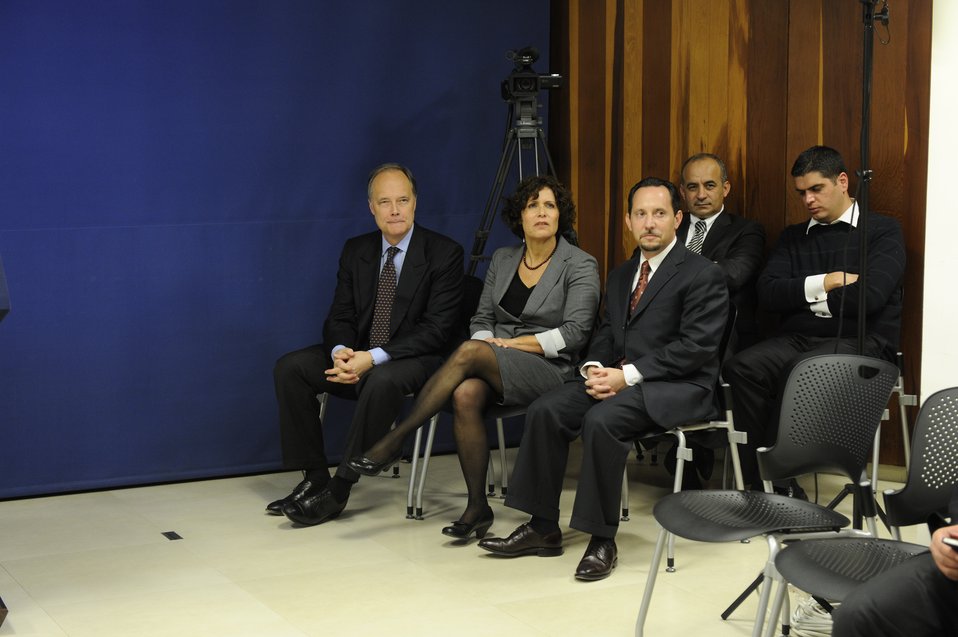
Ambassador Cunningham, Consul General Rubinstein, and CISCO Senior Manager Abzuk Celebrate the ACE Award in Jerusalem

U.S. Ambassador to Israel James Cunningham, U.S. Consul General to Israel Daniel Rubinstein, and Cisco Senior Manager Zika Abzuk, linked via digital video conference with the Secretary of State's Award for Corporate Excellent (ACE) event in Washington, D.C., celebrate the Award at a Jerusalem event in Israel, December 17, 2010.